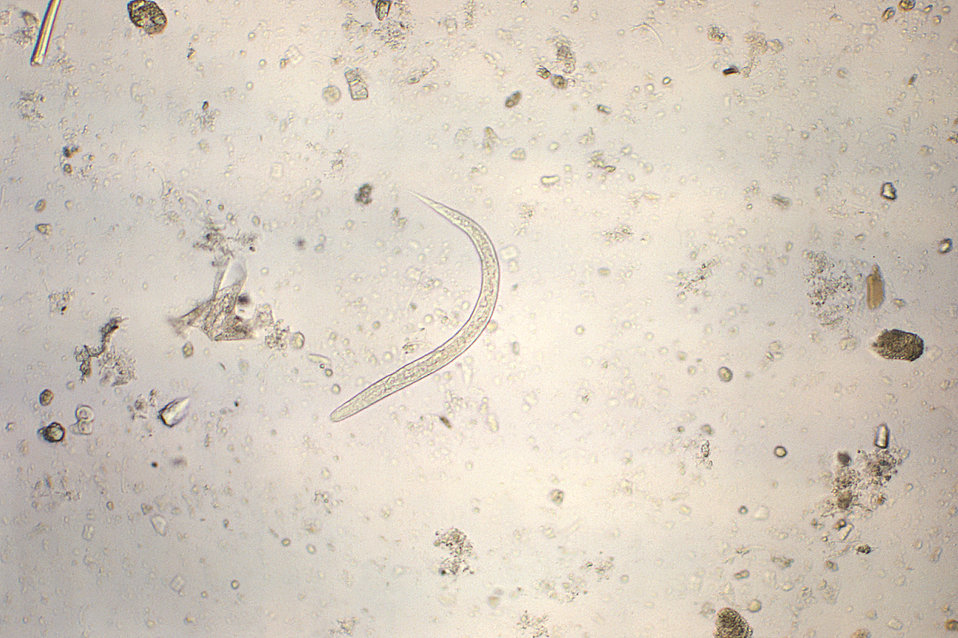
Under a magnification of 128X, this photomicrograph revealed some of the morphologic ultrastructure of a hookworm rhabditiform larva. Rhabditiform (L1) larvae that hatch from eggs are 250-300�m long, and approximately 15-20�m wide. They have a long buccal canal, and an inconspicuous genital primordium. Rhabditiform larvae are usually not found in stool, but may be found there is a delay in processing the stool specimen. If larvae are seen in stool, they must be differentiated from the L1 larvae of Stronyloides stercoralis.